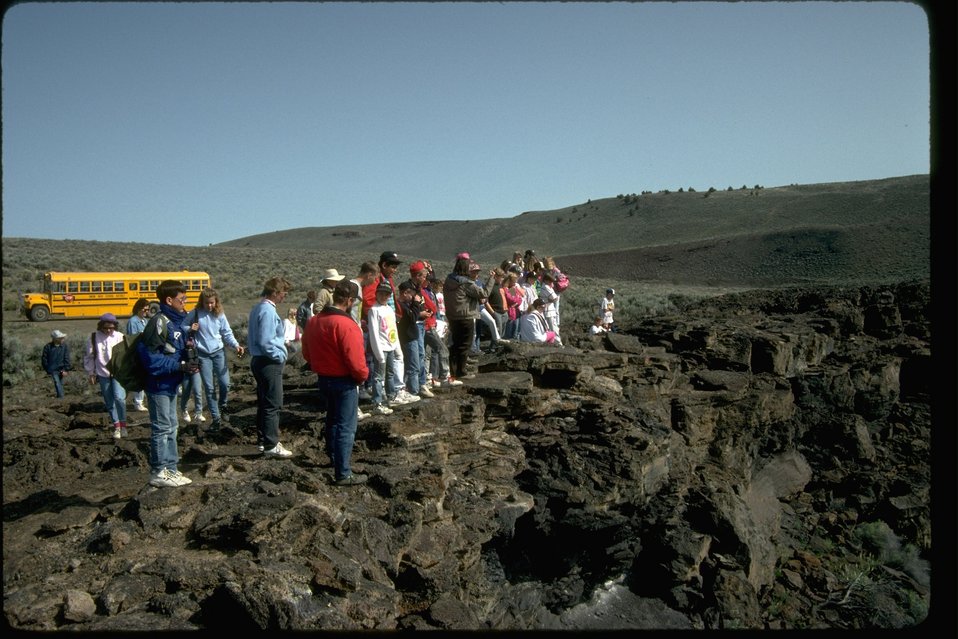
A science class from Burns High School explores Diamond Craters in the Burns District, Oregon.